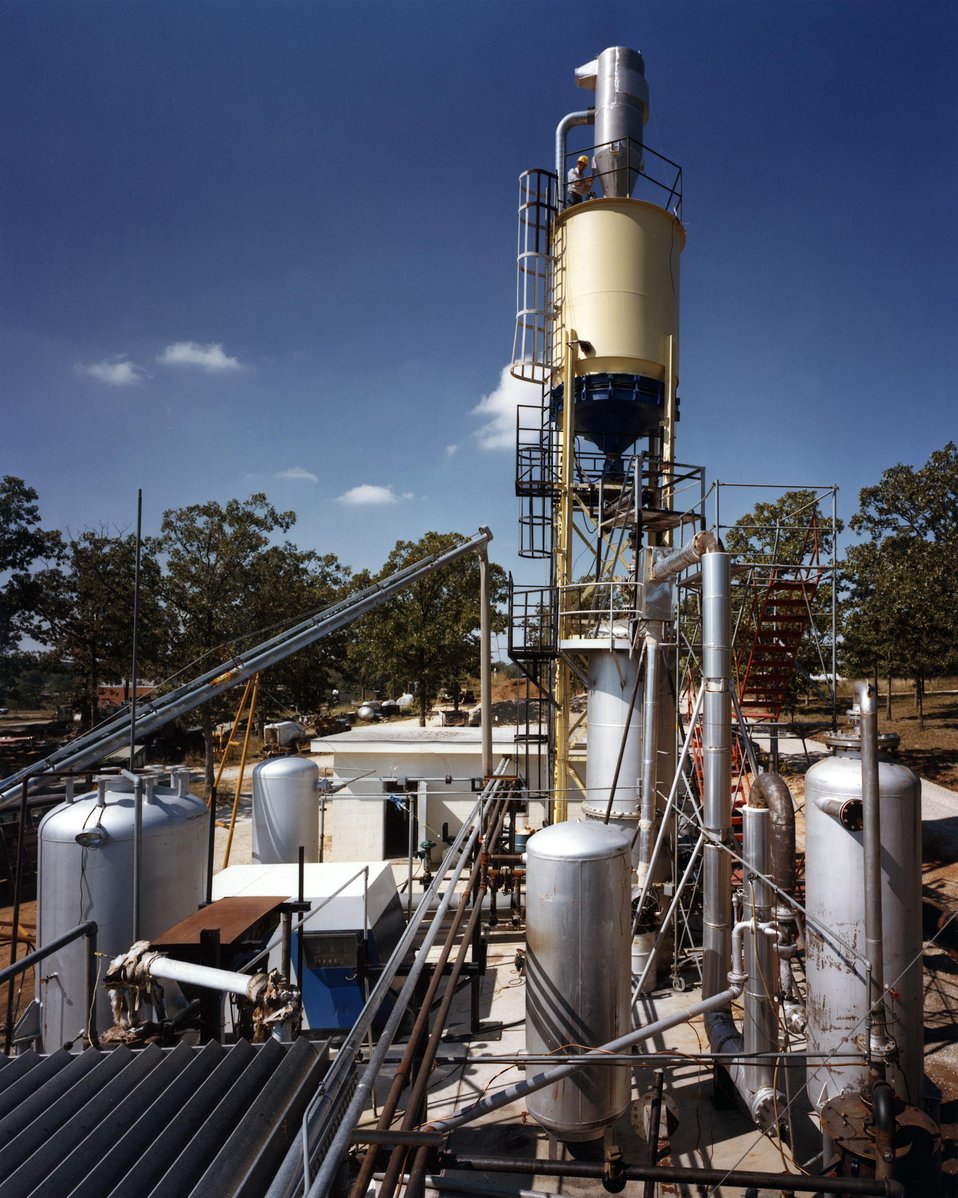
OVERVIEW OF THE GASIFIER WITH PIPING FROM THE REACTOR TO THE WET SCRUBBER (RIGHT).

THE WOOD GASIFIER AT THE UNIVERSITY OF MISSOURI IS PART OF THE PROGRAM TO DEVELOP BIOMASS AS A FUEL SOURCE. WOOD CAN BE PROCESSED TO PRODUCE MEDIUM BTU GAS THAT CAN BE USED DIRECTLY OR UPGRADED INTO SUCH FUELS AS SYNTHETIC NATURAL GAS, METHANOL, AMMONIA, AND PETROCHEMICAL SUBSTITUTES. THE MAIN OBJECTIVE OF THIS PROGRAM IS TO IMPROVE CONVERSION EFFICIENCY AND PRODUCTIVITY AND REDUCE PRODUCTION COSTS OF THE GASIFICATION PROCESS.